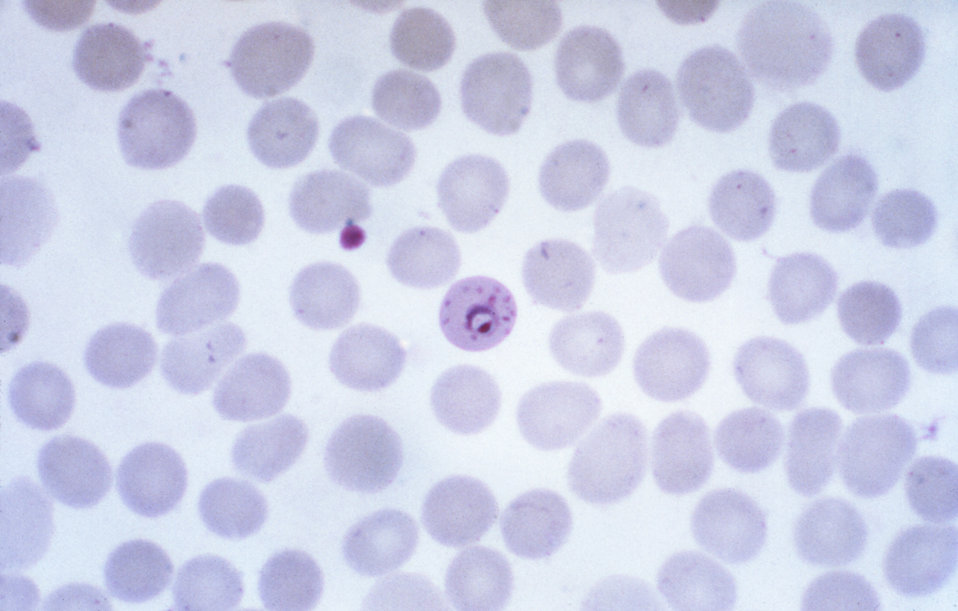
This thin film Giemsa stained micrograph shows a ring-form Plasmodium falciparum trophozoite displaying Maurer's clefts.